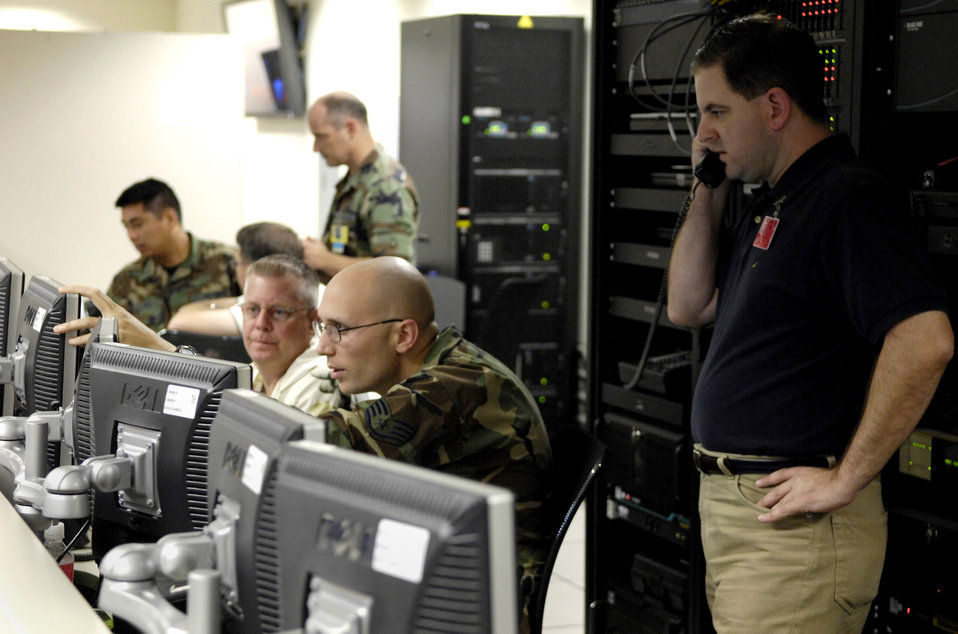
Ops center commands sky during Exercise Valiant Shield

Members of joint interface control cell pull in real time images for operations during Exercise Valiant Shield Aug. 7 in the Air and Space Operation Center at Hickam Air Force Base, Hawaii. The joint interface control cell manages data links for the AOC. Valiant Shield is a week-long exercise that tests the military's ability to rapidly consolidate joint forces in response to regional contingencies, involves approximately 22,000 troops, 30 ships and some 275 aircraft.